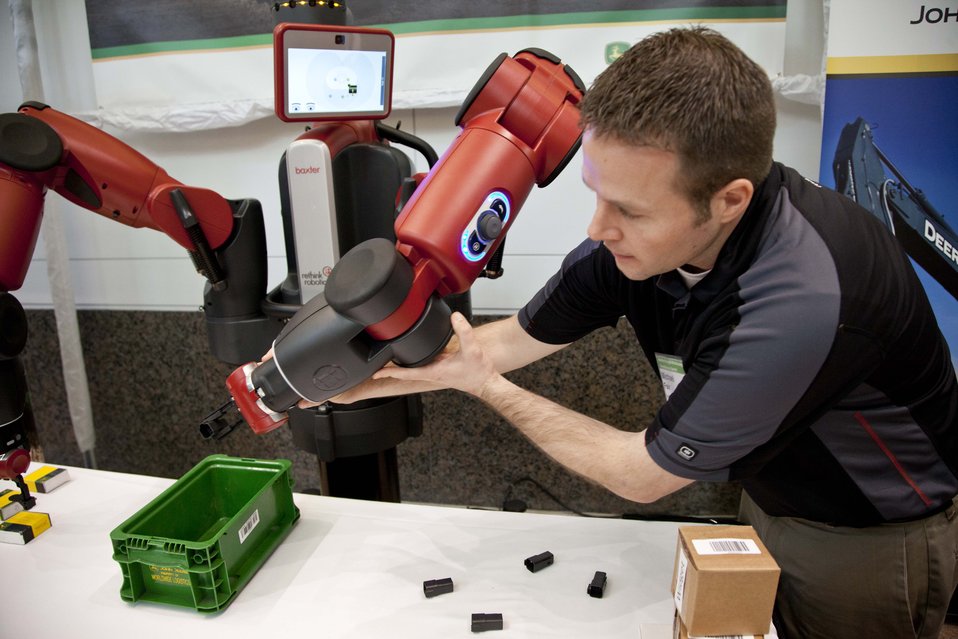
AEMC Summit

In this picture, a Rethink Robotics employee (a Boston-based company that was started by an MIT professor), is teaching Baxter how to complete a task. After one demonstration, Baxter is able to pick up the black plastic pieces and put them in the correct bin.